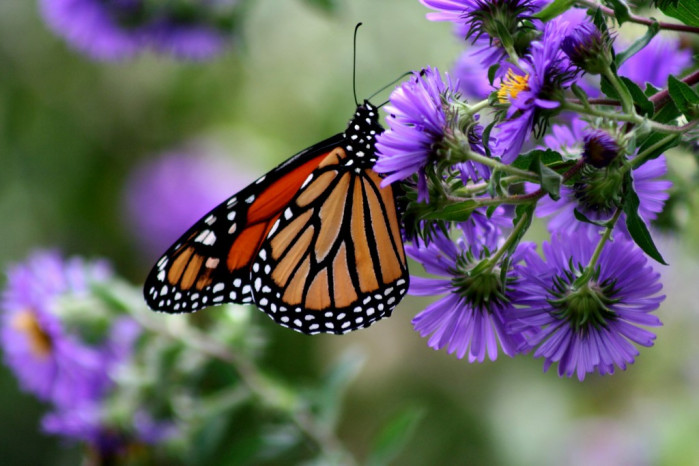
monarch butterfly on aster

John Heinz National Wildlife Refuge, PA